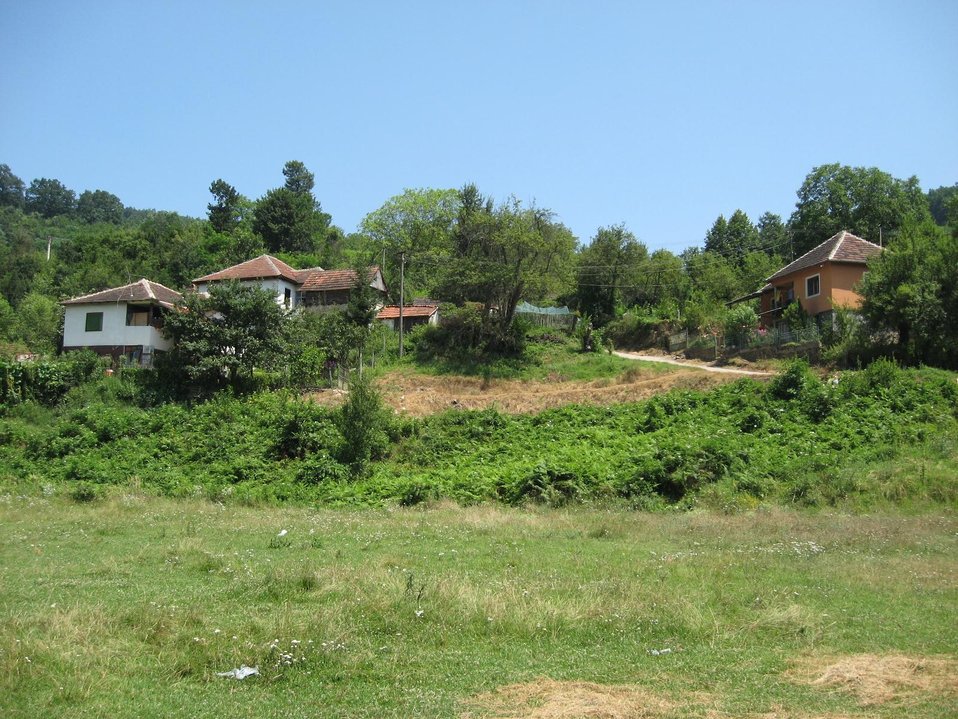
Српски / srpski: Sopstvena slika sela Dadince pogled na selo sa reke. Dragan Cvetkovic juli 2010